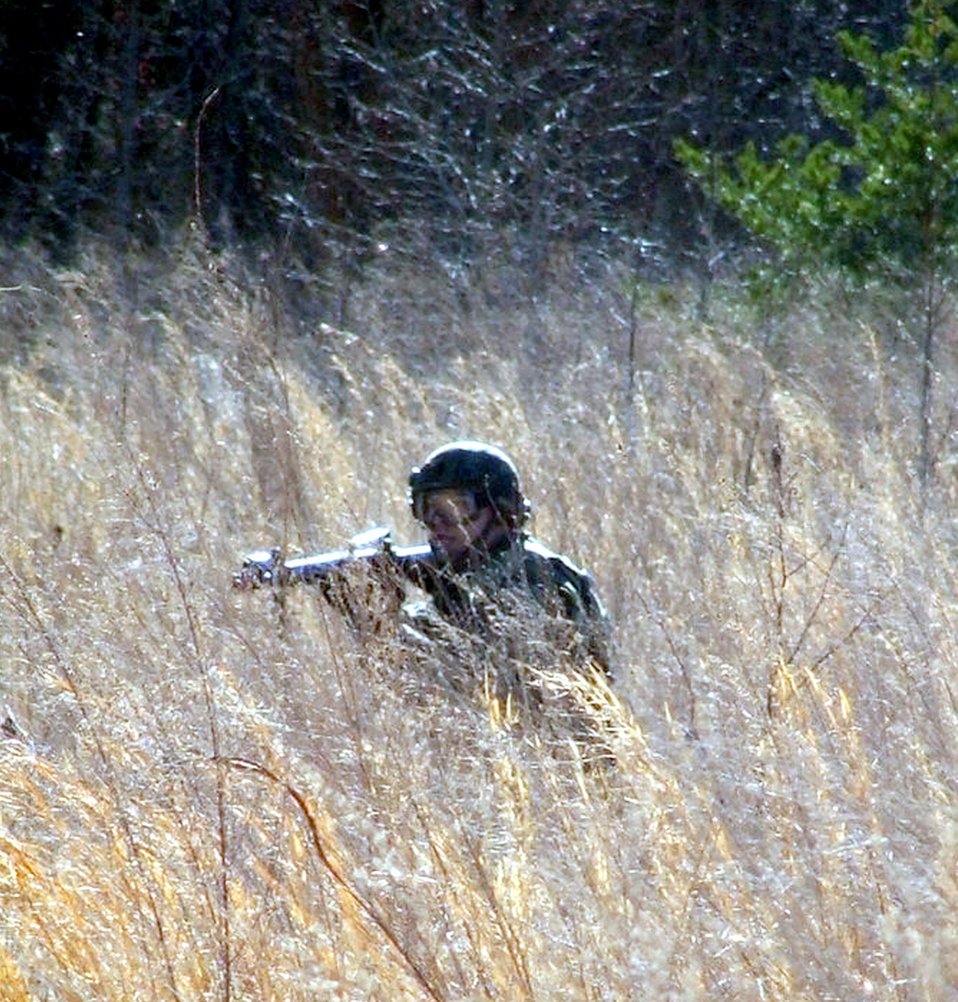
Contingency skills training

Senior Airman Adam Guerrero practices combat tactics and squad patrolling maneuvers during the Air Force Integrated Contingency Skills Training Course 06-3, at Fort Dix, N.J., on Monday, March 27, 2006. More than 140 deploying Airmen are training in combat tactics and convoy operations, conducted by the Air Mobility Warfare Center's 421st Combat Training Squadron. Airman Guerrero is an air traffic controller from Travis Air Force Base, Calif.